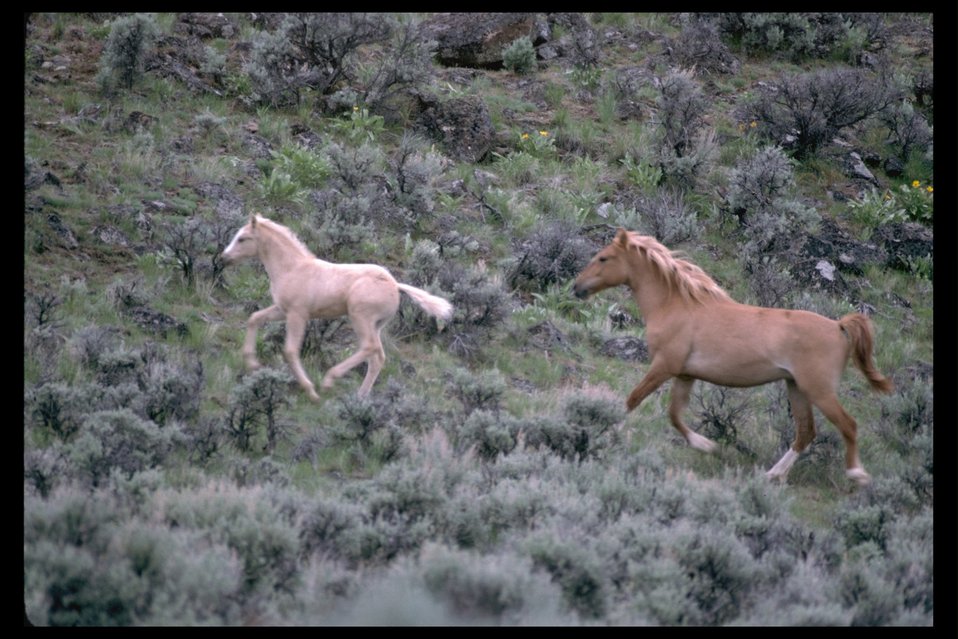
Wild horses in the South Steens HMA.